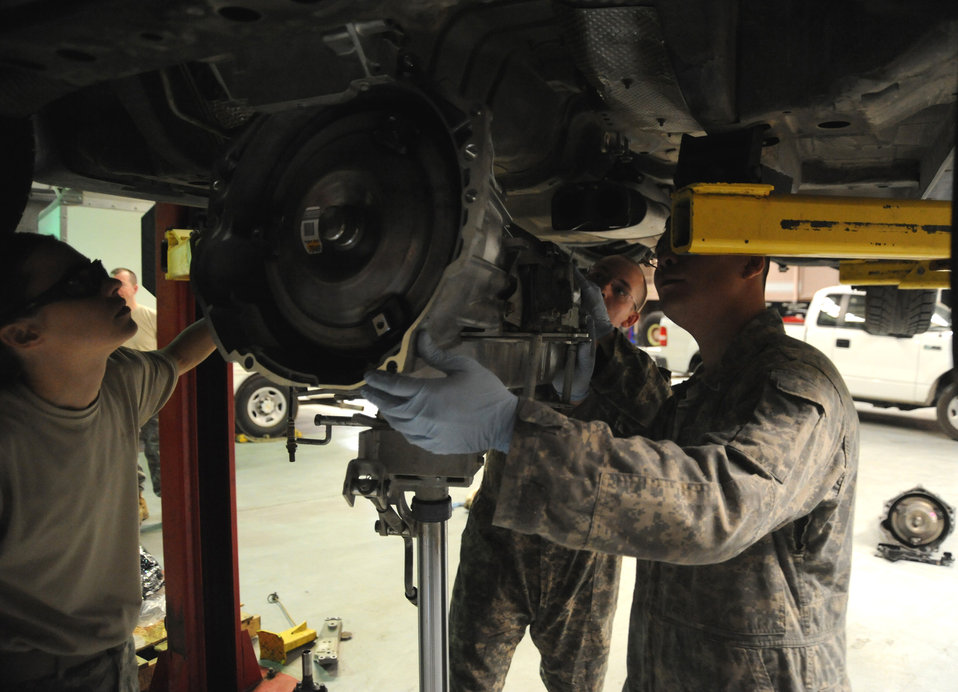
Let's get it started

Lt. Col. Tanya Kubinec, Senior Airman Adam Owens and Senior Airman Michael Jakubec line up a new transmission with the engine of a Pontiac GTO April 26 at an air base in Southwest Asia. Colonel Kubinec, the 380th Expeditionary Logistics Readiness Squadron commander, coined the two Airmen for their work on the GTO as well as other critical vehicles belonging to the 380th Air Expeditionary Wing. Airmen Owens and Jakubec are 380th ELRS, vehicle maintainers.